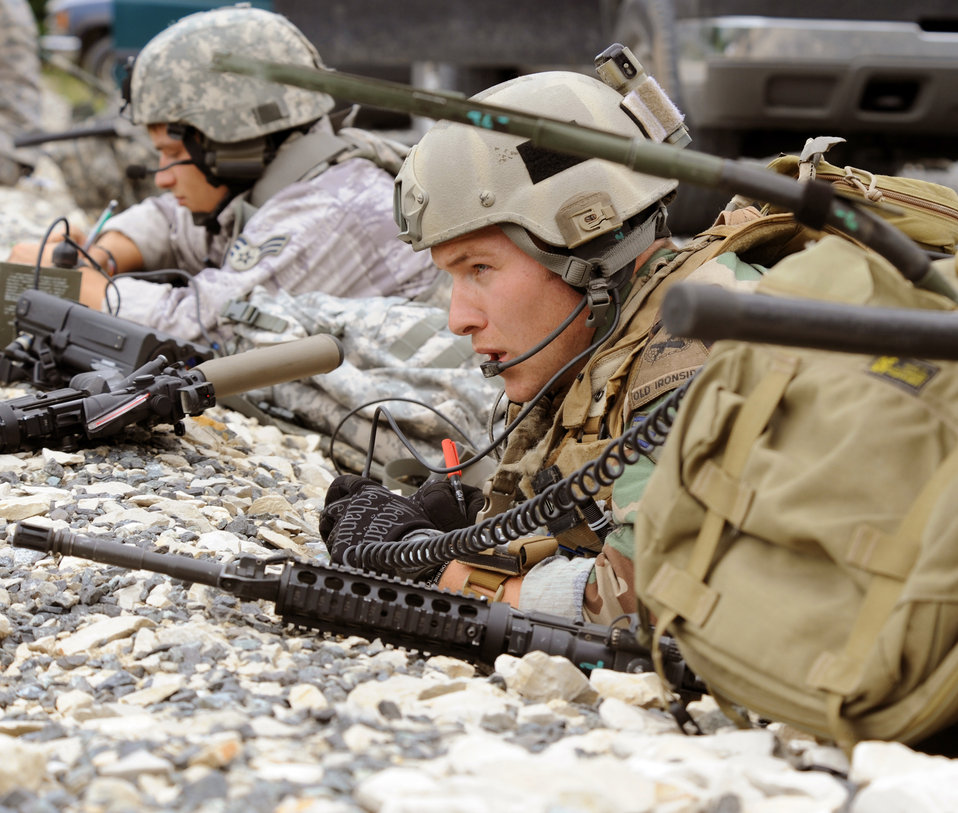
Set coordinates here

Senior Airman Rich Garrett (foreground) radios for air cover during a close-air support training mission Aug. 5, 2010, during exercise Allied Strike 10 at Grafenwoehr, Germany. He is a joint tactical air controller with the 1st Air Support Operations Squadron from Army Garrison Wiesbaden, Germany.